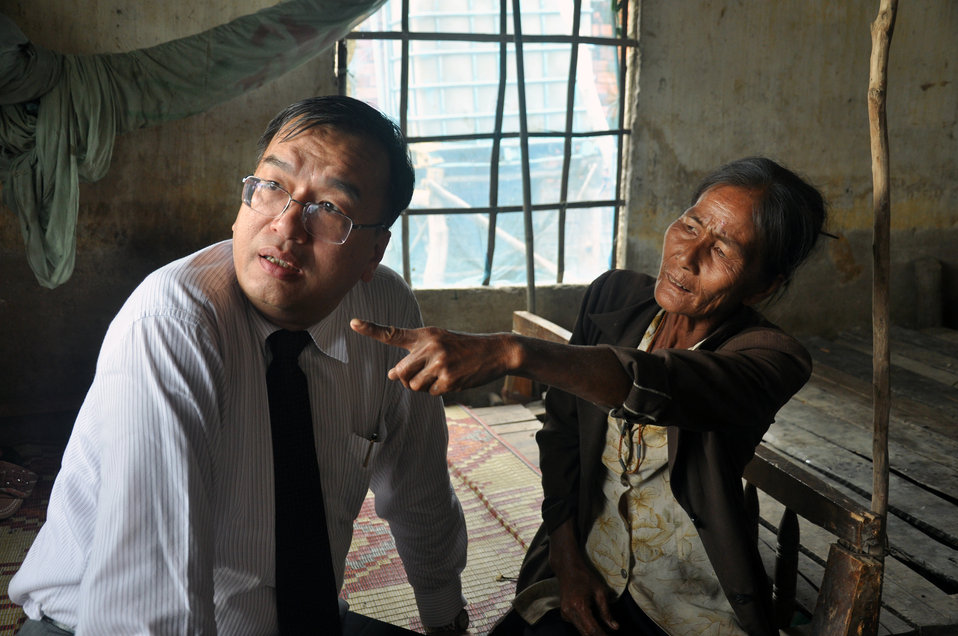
U.S. Consul General Le An visits USAID beneficiaries

USAID site visit to Long An Province to visit flood relief beneficiaries